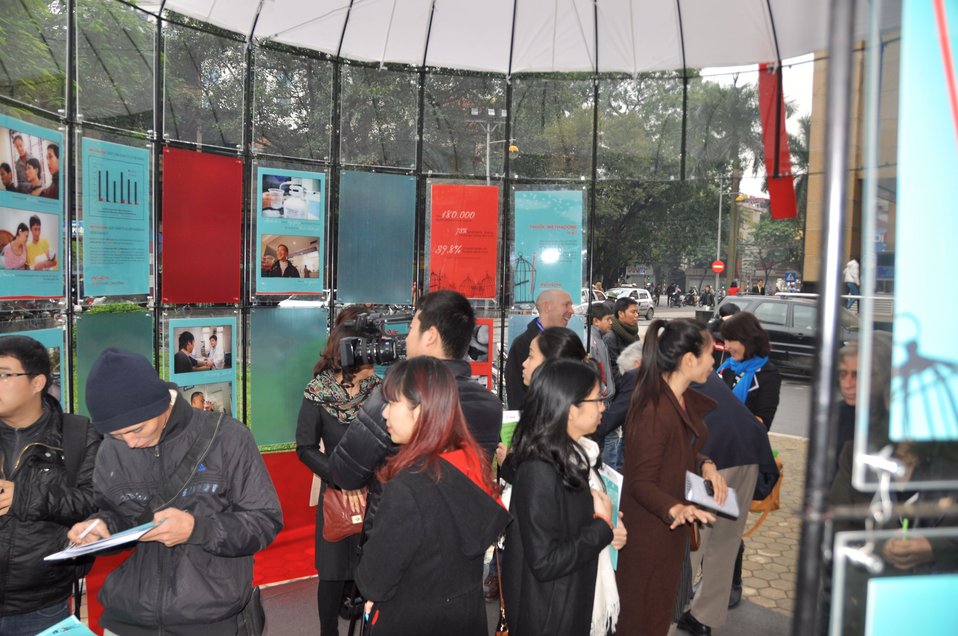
Photo Exhibition Launch

USAID/Vietnam